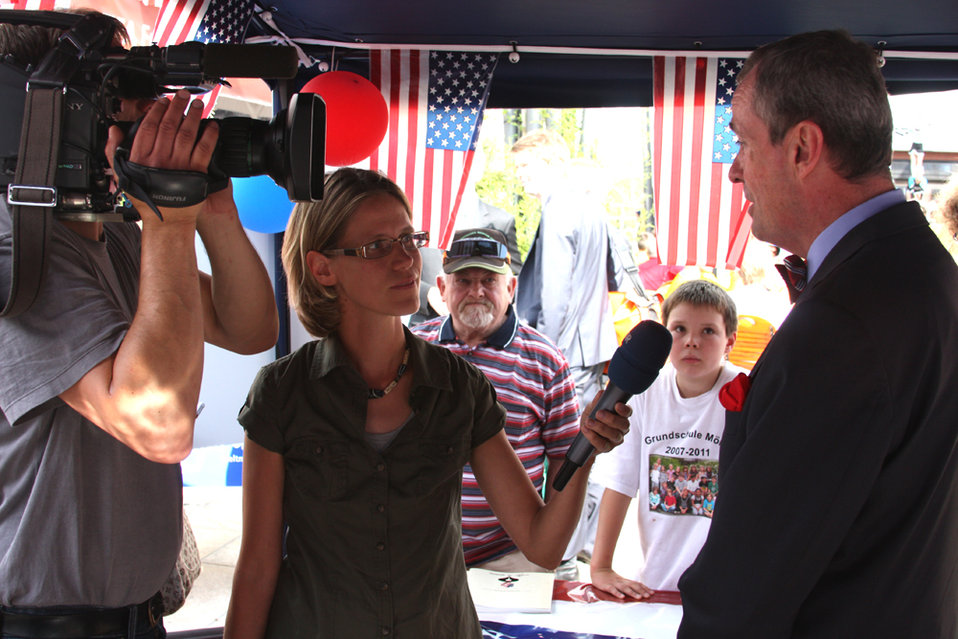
Ambassador Murphy Is Interviewed By NDR TV

U.S. Ambassador to Germany Philip D. Murphy is interviewed by NDR TV at the Consulate Booth in Wolfsburg, Germany, on July 6, 2011.